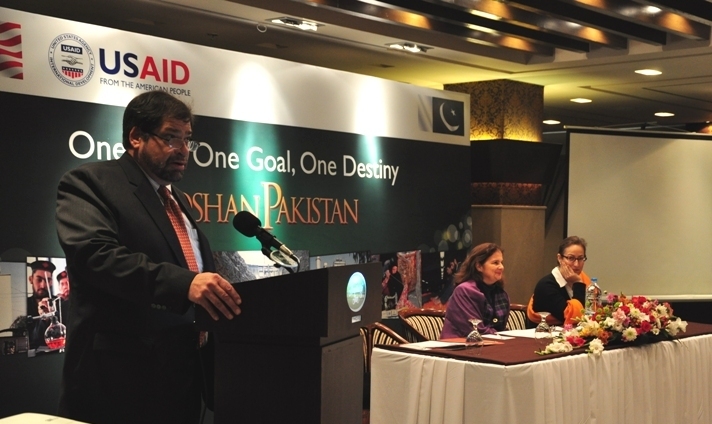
USAID Provincial Director Jeffrey Bakken giving welcome remarks.